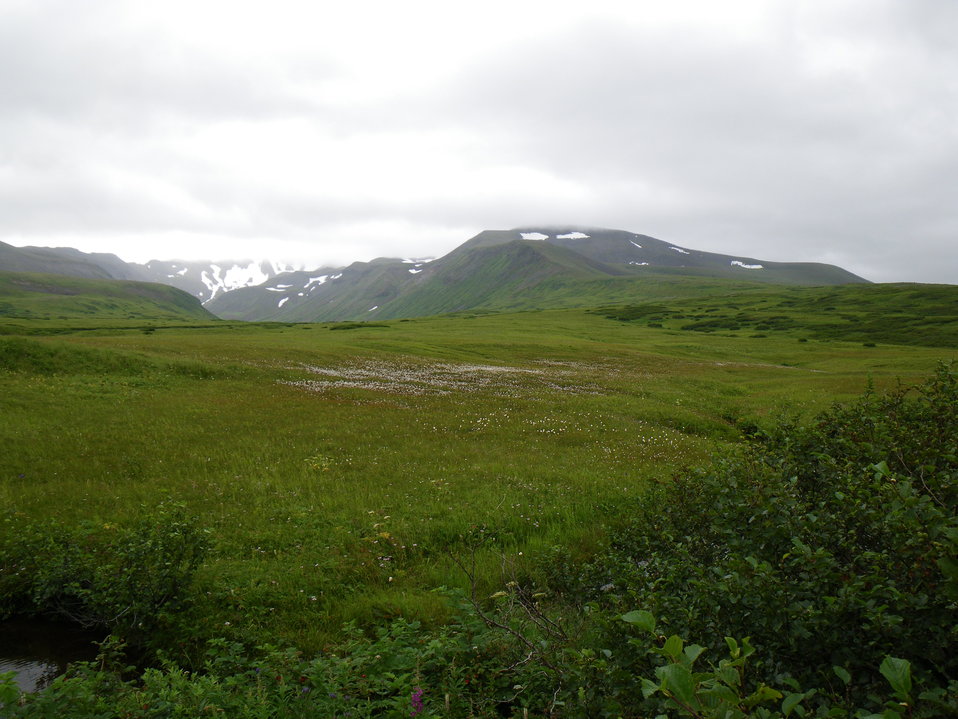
Cottongrass near Frosty Peak

Izembek National Wildlife Refuge